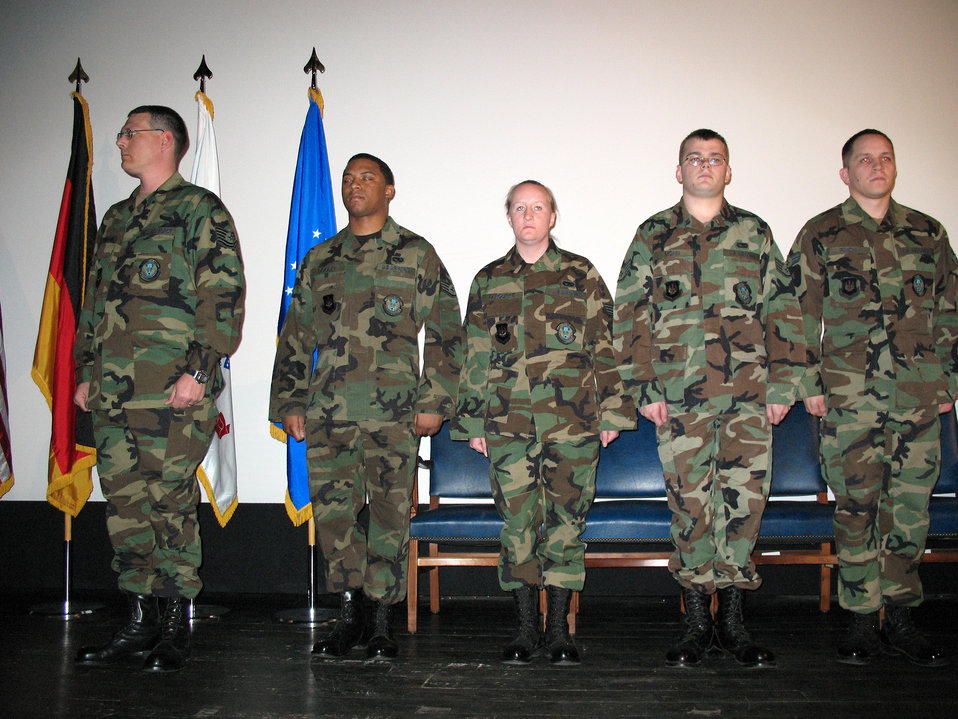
Five Ramstein Airmen earn Army Combat Action Badge

Five Airmen from the 435th Vehicle Readiness Squadron at Ramstein Air Base, Germany await the presentation of their Army Combat Action Badges March 16. The Airmen were involved in combat during a deployment in support of the Army last year in Iraq.